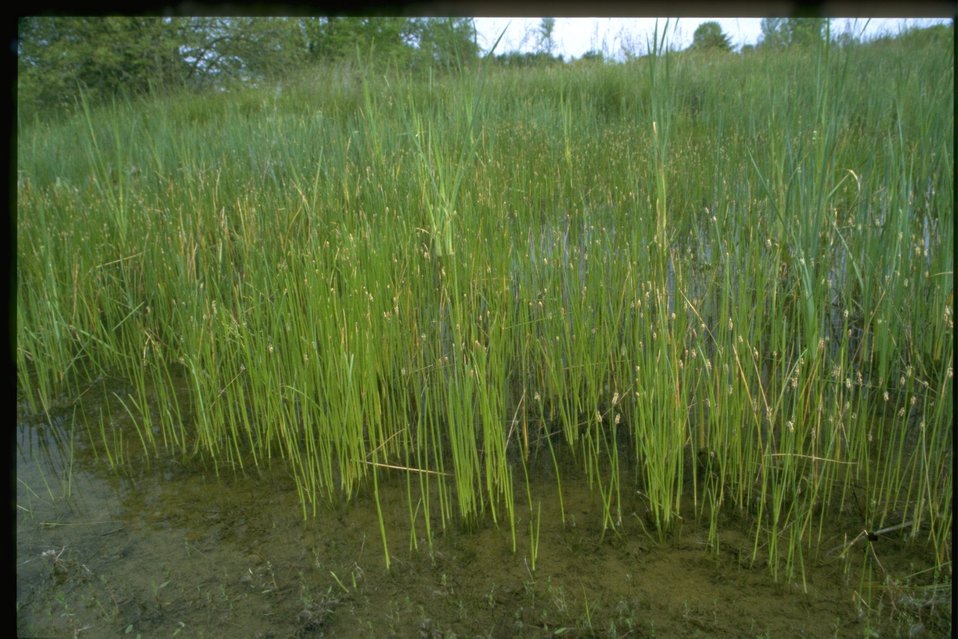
Medium shot of Typha latifolia/ Eleochon's.